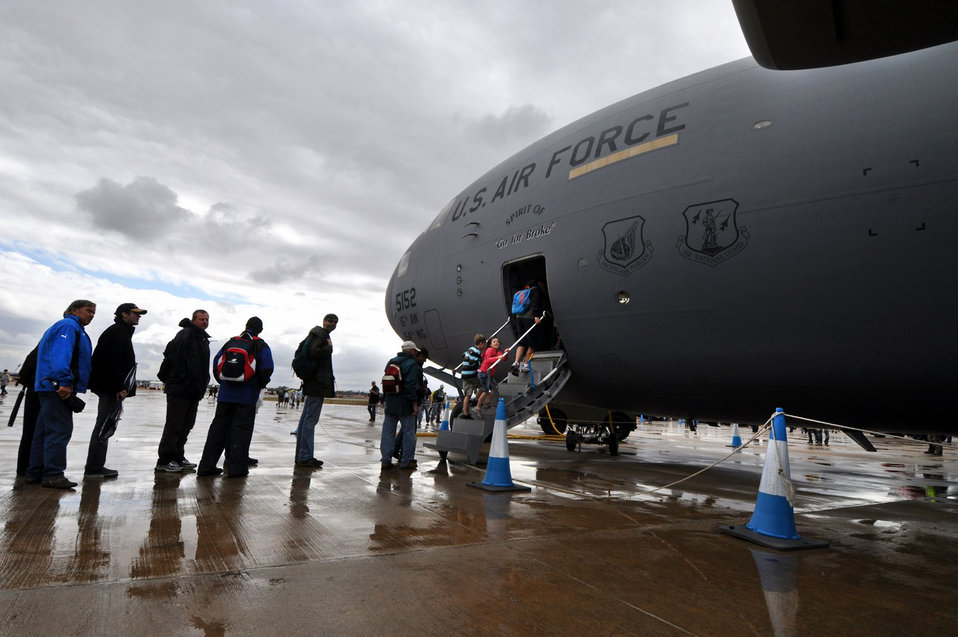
Airmen represent U.S. military at airshow 'down under'

Airshow crowds take a firsthand look at a C-17 Globemaster III at the 2009 Australian International Airshow March 15 at Avalon Airport, Australia. The C-17, from the 535th Airlift Squadron from Hickam Air Force Base, Hawaii, was one of 11 U.S. military aircraft participating in the airshow.